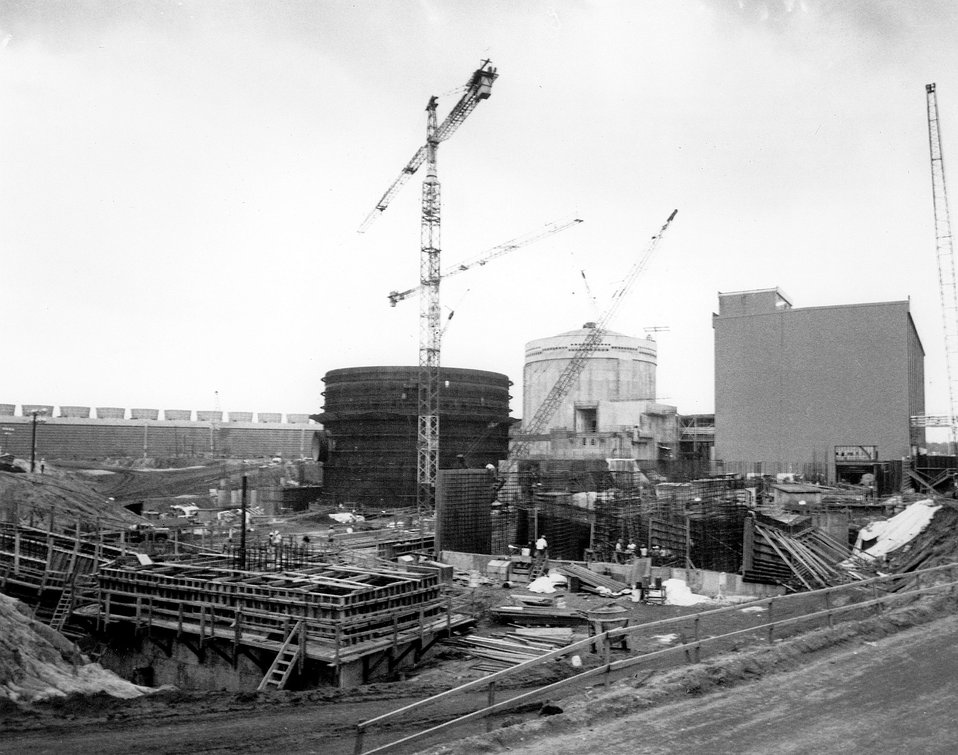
Construction activities at the Joseph M. Farley Power Plant.